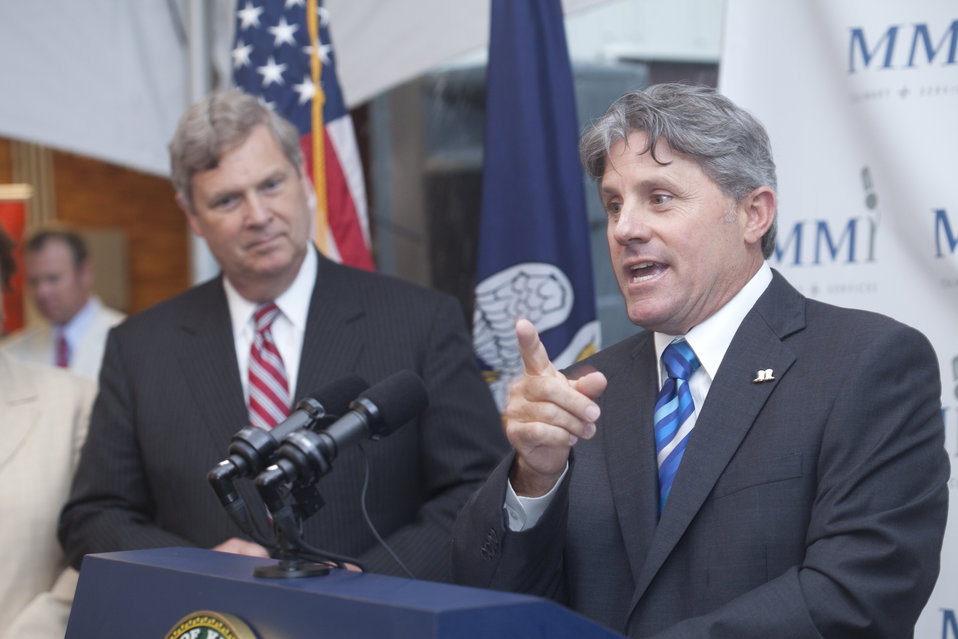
President of MMI, Incorporated Culinary Services Michael Maenza speaks during Agriculture Secretary Tom Vilsack's visit to MMI, Inc. in Kenner, LA on Wednesday, May 1, 2013.